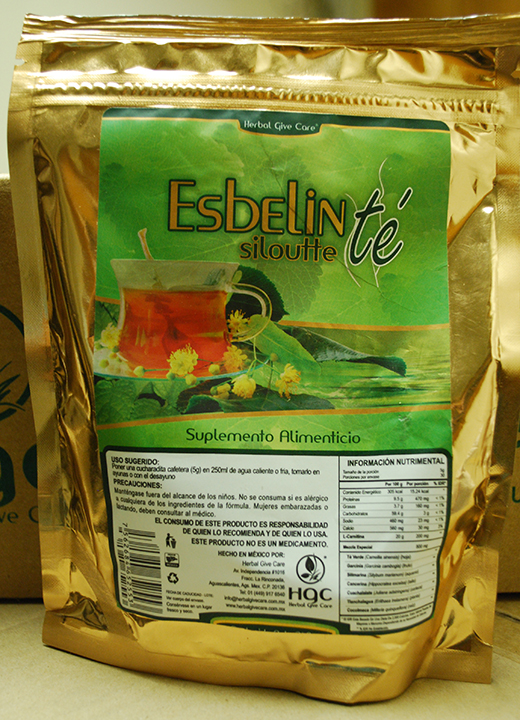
RECALLED – Dietary Supplement

July 19, 2013 – Product Recall – Herbal Give Care LLC Issues Voluntary Nationwide Recall of Esbelin Siloutte Te and Esbelin Siloutte Vitamin Supplement Due to Potential Health Risks.